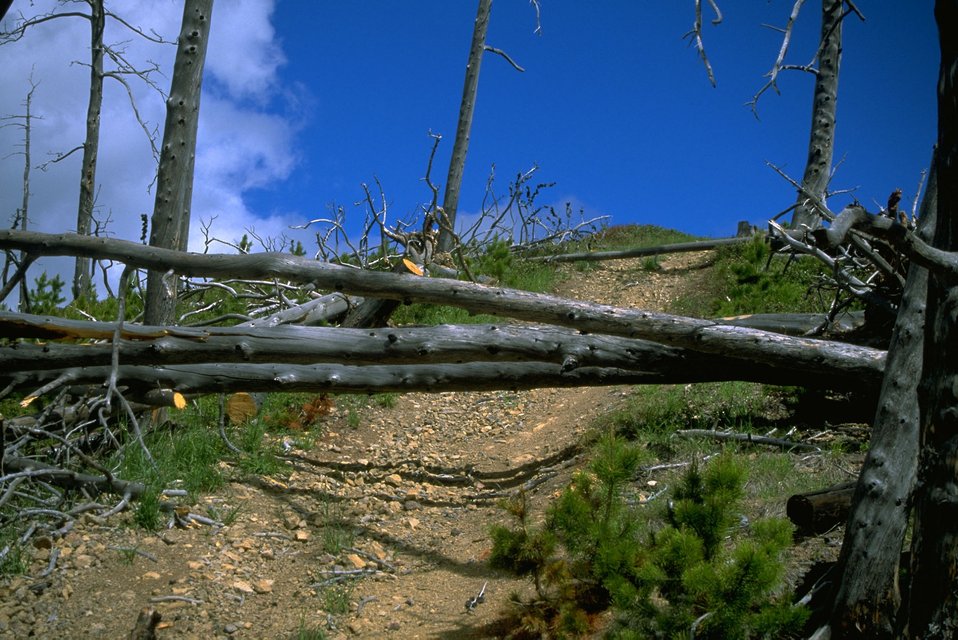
Closed dozer trail in the Judith Mountains